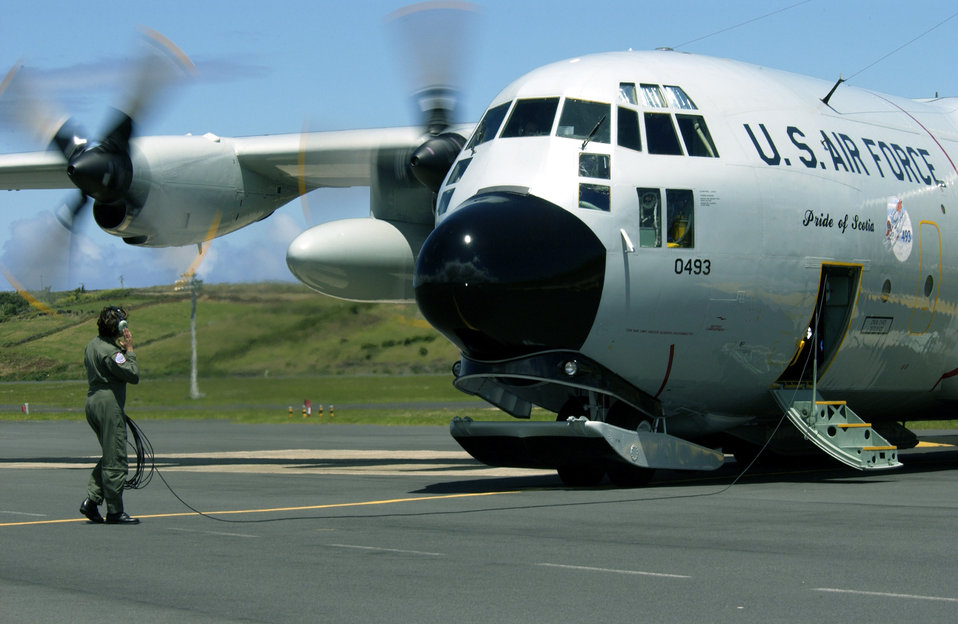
Going home ofter tattoo

LAJES FIELD, Azores (AFPN) -- A crew chief from the 109th Air Wing at New York's Stratton Air National Guard Base performs pre-flight checks on an LC-130H on July 27 as the crew prepares to depart. The crew is returning from the Royal International Air Tattoo at Royal Air Force Fairford, England, where they won the prize for best-kept military aircraft. It was one of 150 aircraft from 30 countries at the tattoo.